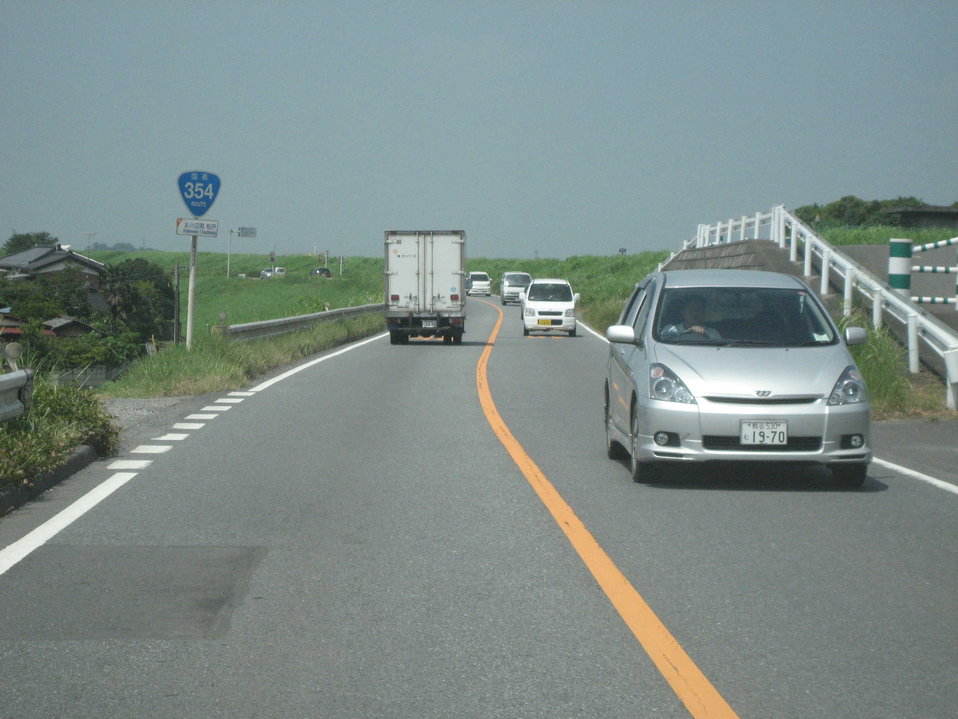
北川辺町国道354（渡良瀬遊水地沿い）